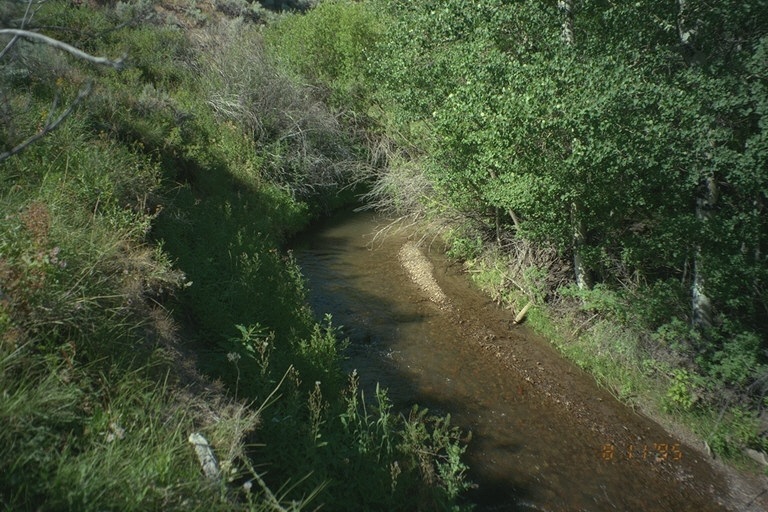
Riparian area Public Lands Salmon Field Office UCSC Upper Columbia Salmon Clearwater District